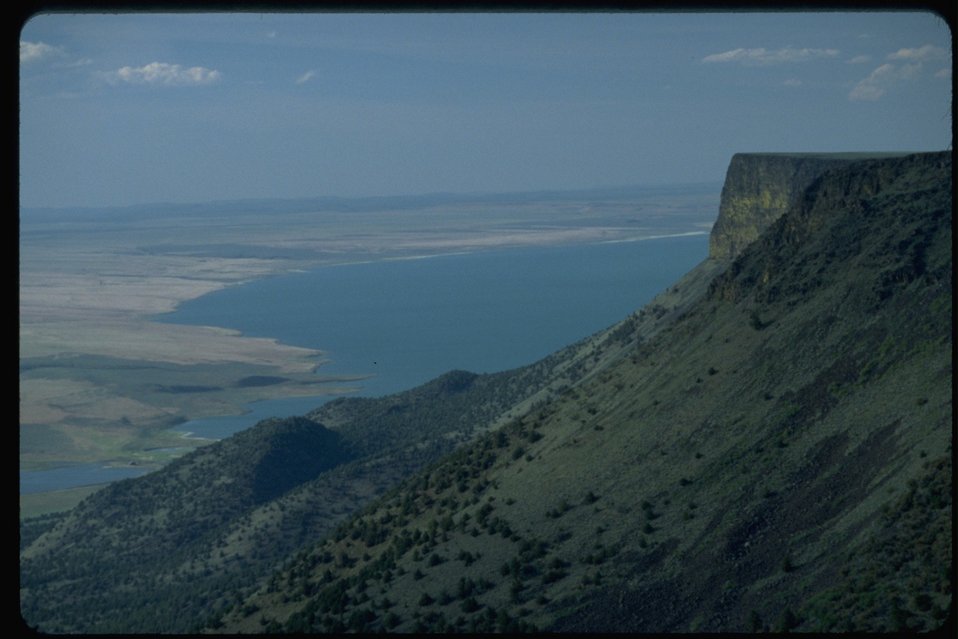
Abert Rim, view from Forest Service Hang Glider Site.